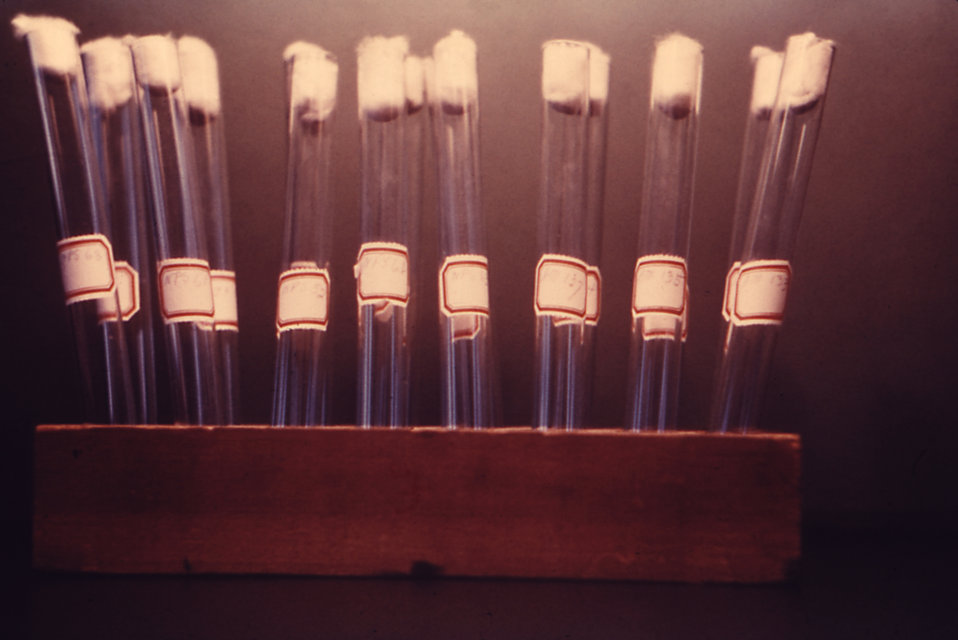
These are test tubes containing aspirated fleas as part of the San Francisco plague series.